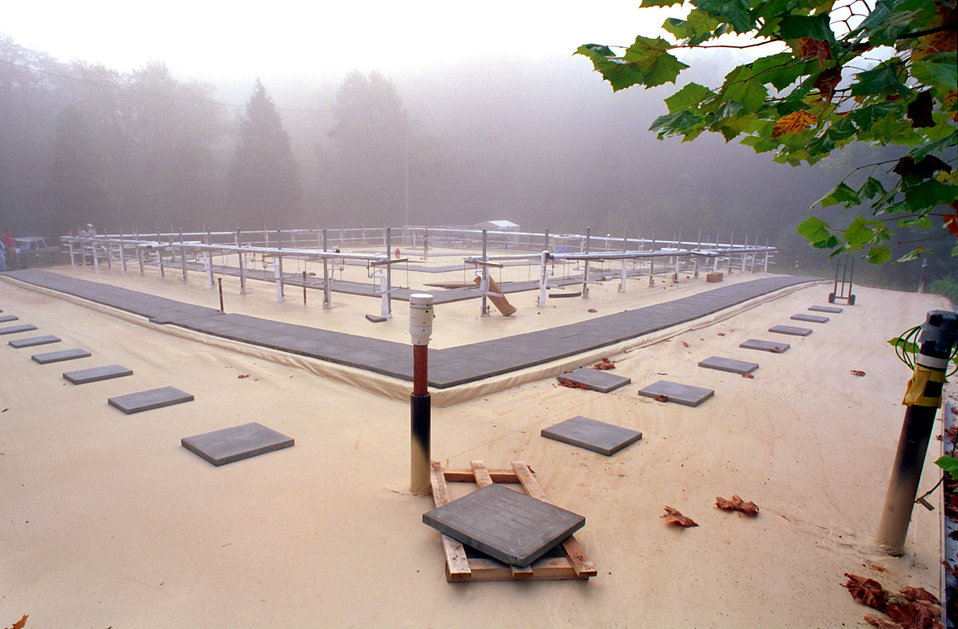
Cryogenics Barrier Demo Project at ORNL 1997

97-489-7 DOE photo Lynn Freeny 1997 Oak Ridge Tennessee